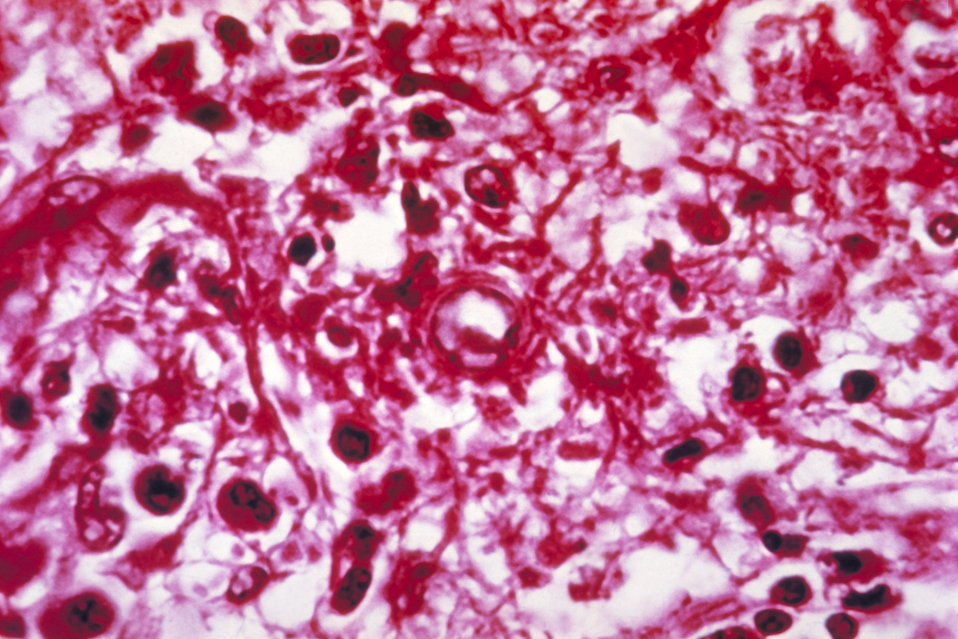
This micrograph depicts the histopathologic changes associated with paracoccidioidomycosis due to P. brasiliensis.